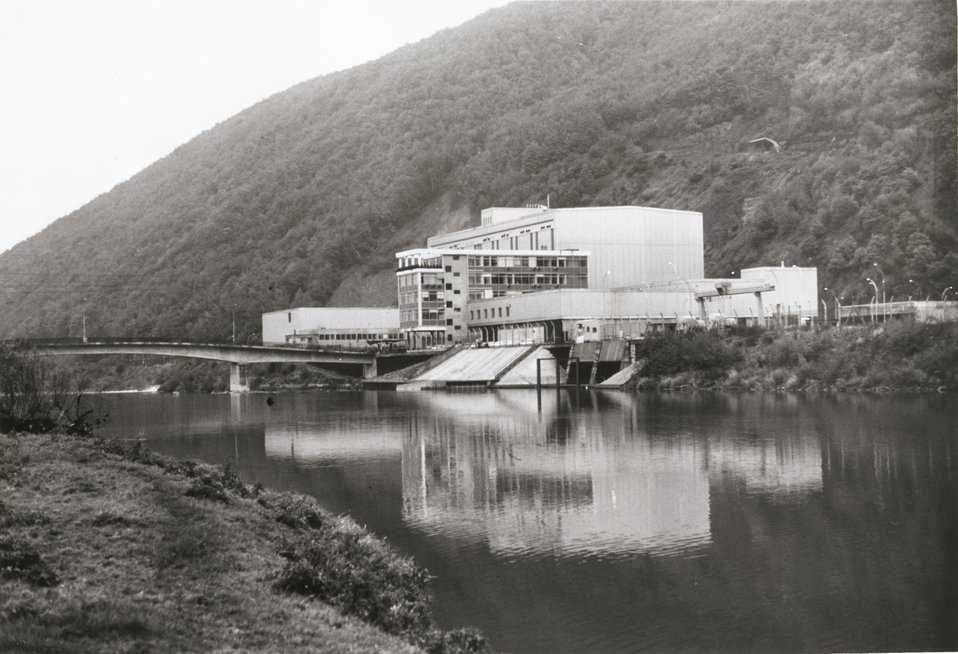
A view of the SENA nuclear power plant, a 266,000 KWE PWR, which achieved criticality in 1966. This reactor, built under the U.S.-Euratom Joint Program, is located at Chooz France on the Meuse River. undated